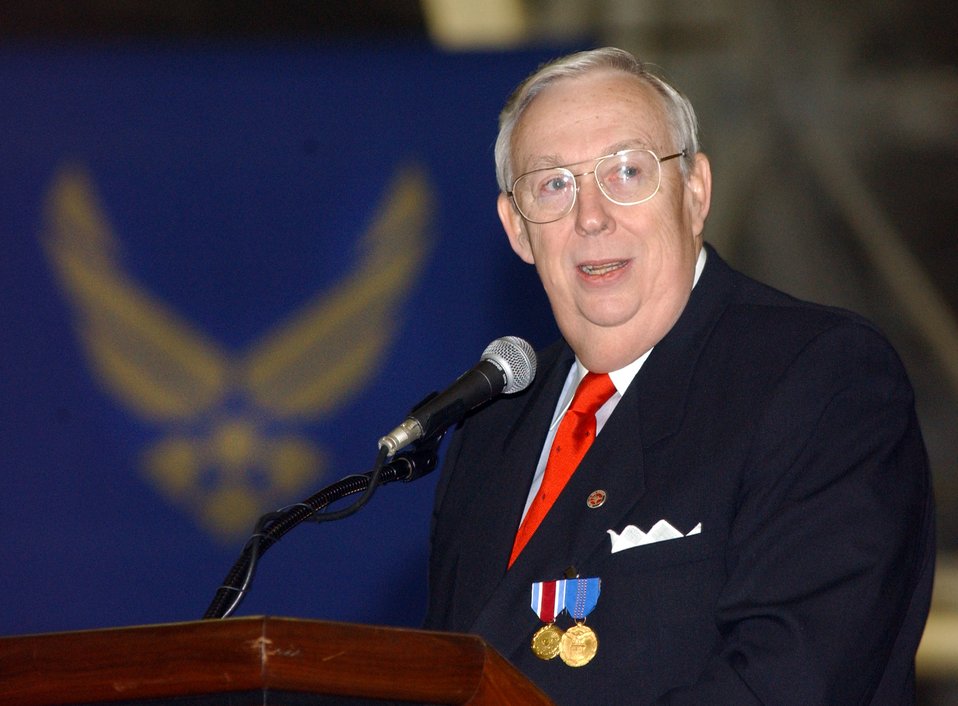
Secretary Roche retires

ANDREWS AIR FORCE BASE, Md. -- Air Force Secretary Dr. James G. Roche speaks during his retirement ceremony here Jan. 18.